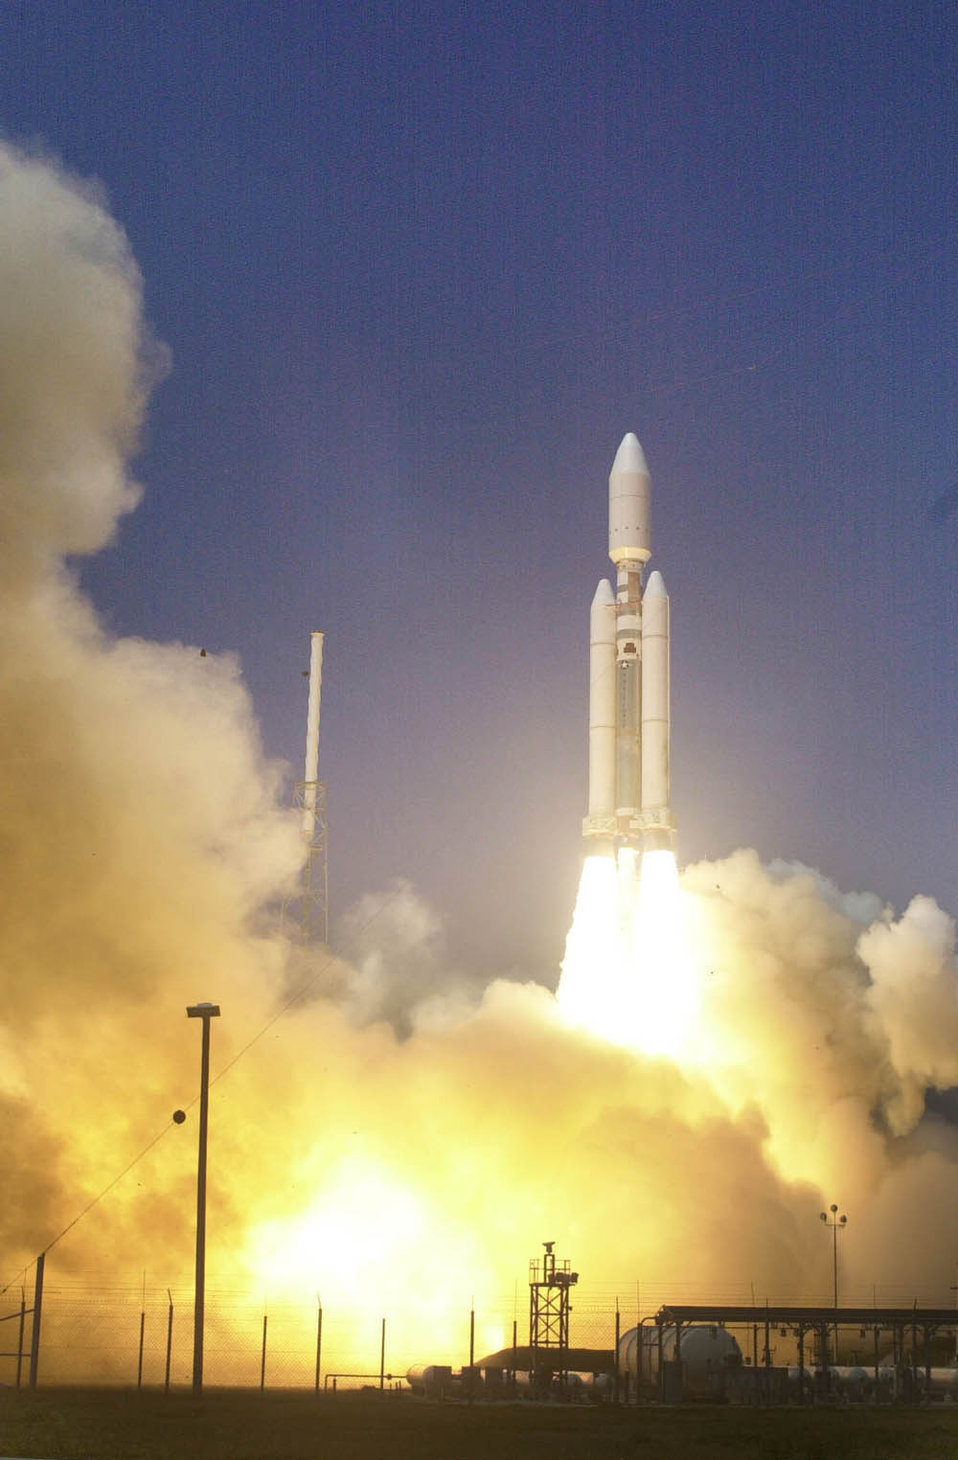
Titan IVB liftoff

CAPE CANAVERAL AIR FORCE STATION, Fla. -- A U.S. Air Force Titan IVB space launch vehicle thundered into the Florida sky May 8, 2000, carrying a Defense Support Program (DSP) satellite that will add to a constellation of similar satellites the Air Force uses to provide early warning of missile launches worldwide. An inertial upper stage transferred the satellite to its final orbit. The Titan IVB is the nation's largest, most powerful expendable launch vehicle and is built by Lockheed Martin Space Systems Company-Astronautics Operations near Denver, Colo. The Titan IVB is capable of boosting up to 47,800 pounds into low-Earth orbit or more than 12,700 pounds into geosynchronous orbit 22,300 miles above Earth.